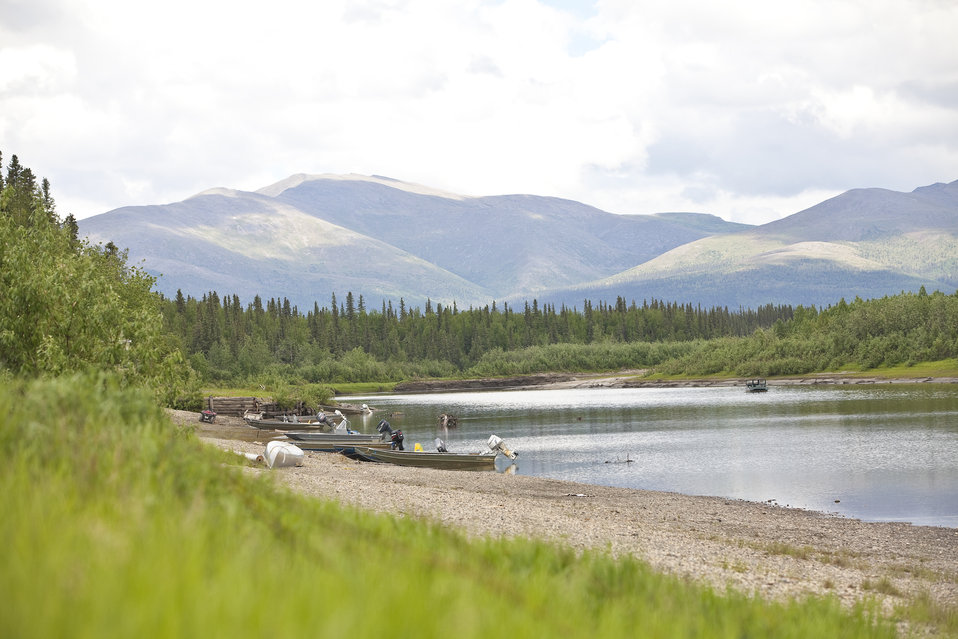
Northwest Alaska landscape

NANA operates in the remote northwest region of Alaska.